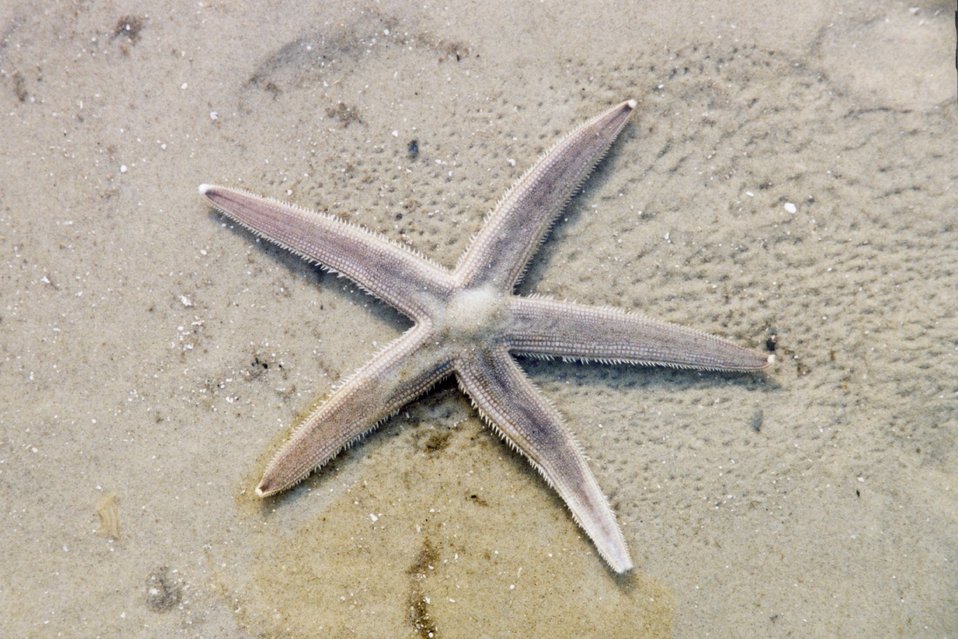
A sea star left on the beach after the tide receded.